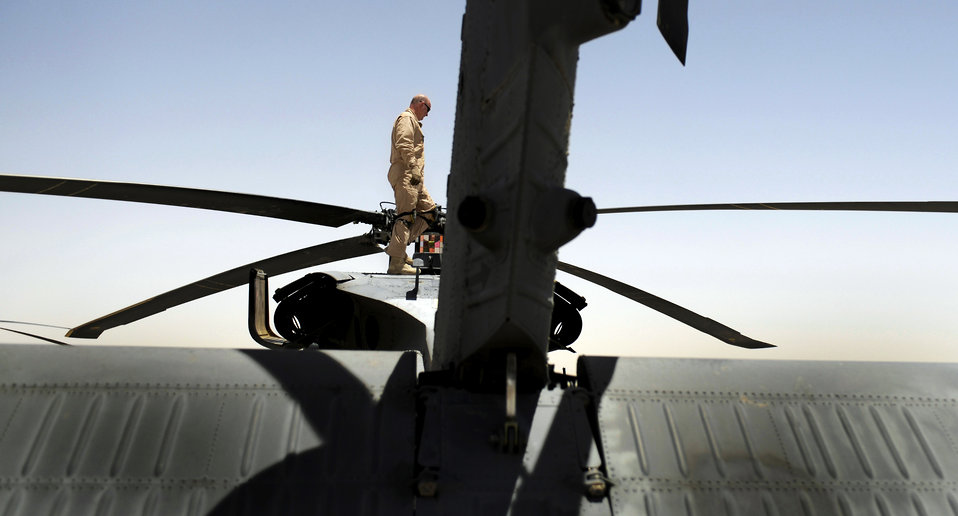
Flight engineers: Critical component to combat search, rescue mission

Master Sgt. James Patterson performs a preflight inspection on a HH-60G Pave Hawk June 23 at Camp Bastion, Afghanistan. Sergeant Patterson is a flight engineer with the 129th Expeditionary Rescue Squadron.